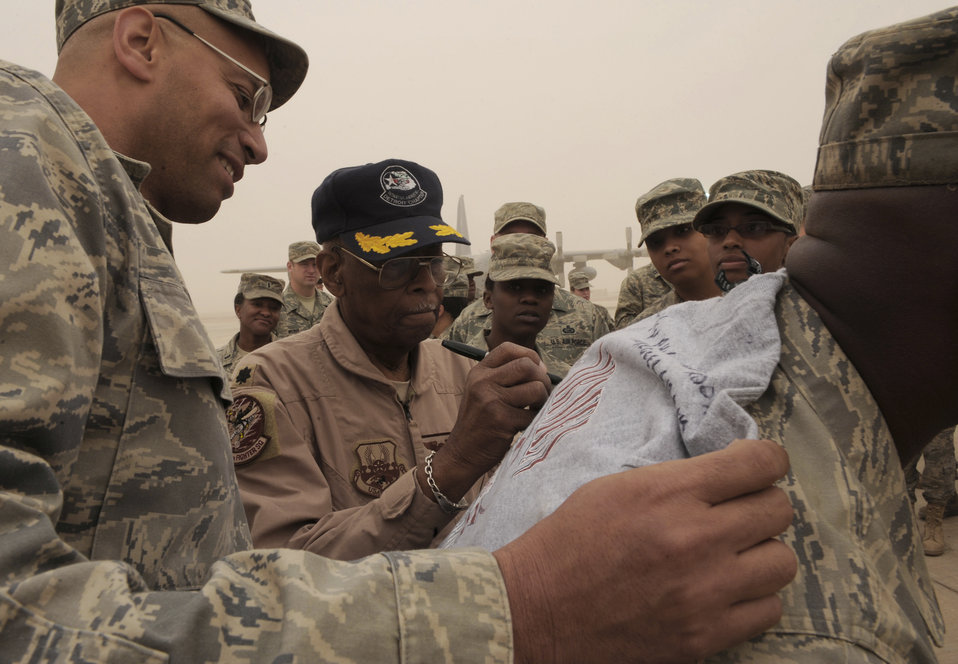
Tuskegee Airmen ... the legacy continues

Retired Lt. Col. Alexander Jefferson, a Tuskegee Airman, signs a shirt and speaks with Airmen April 24 at Joint Base Balad, Iraq. Four Tuskegee Airmen met with Airmen here assigned to the 332nd Air Expeditionary Wing during a three-day visit.